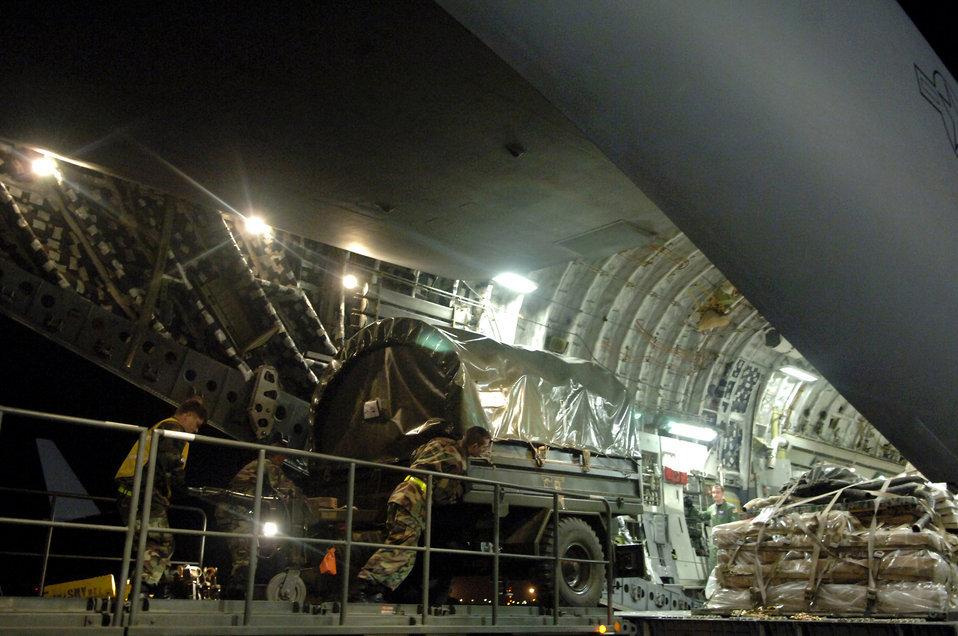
Turkish-U.S. airlift effort brings supplies to Afghan Army

Airmen load cargo onto a C-17 Globemaster III Feb. 20 at Incirlik Air Base, Turkey. Turkish and U.S. Air Forces' joint effort provided 94,000 pounds of supplies and equipment for Afghan army to use in the war on terrorism. The Airmen are assigned to the 728th Air Mobility Squadron.